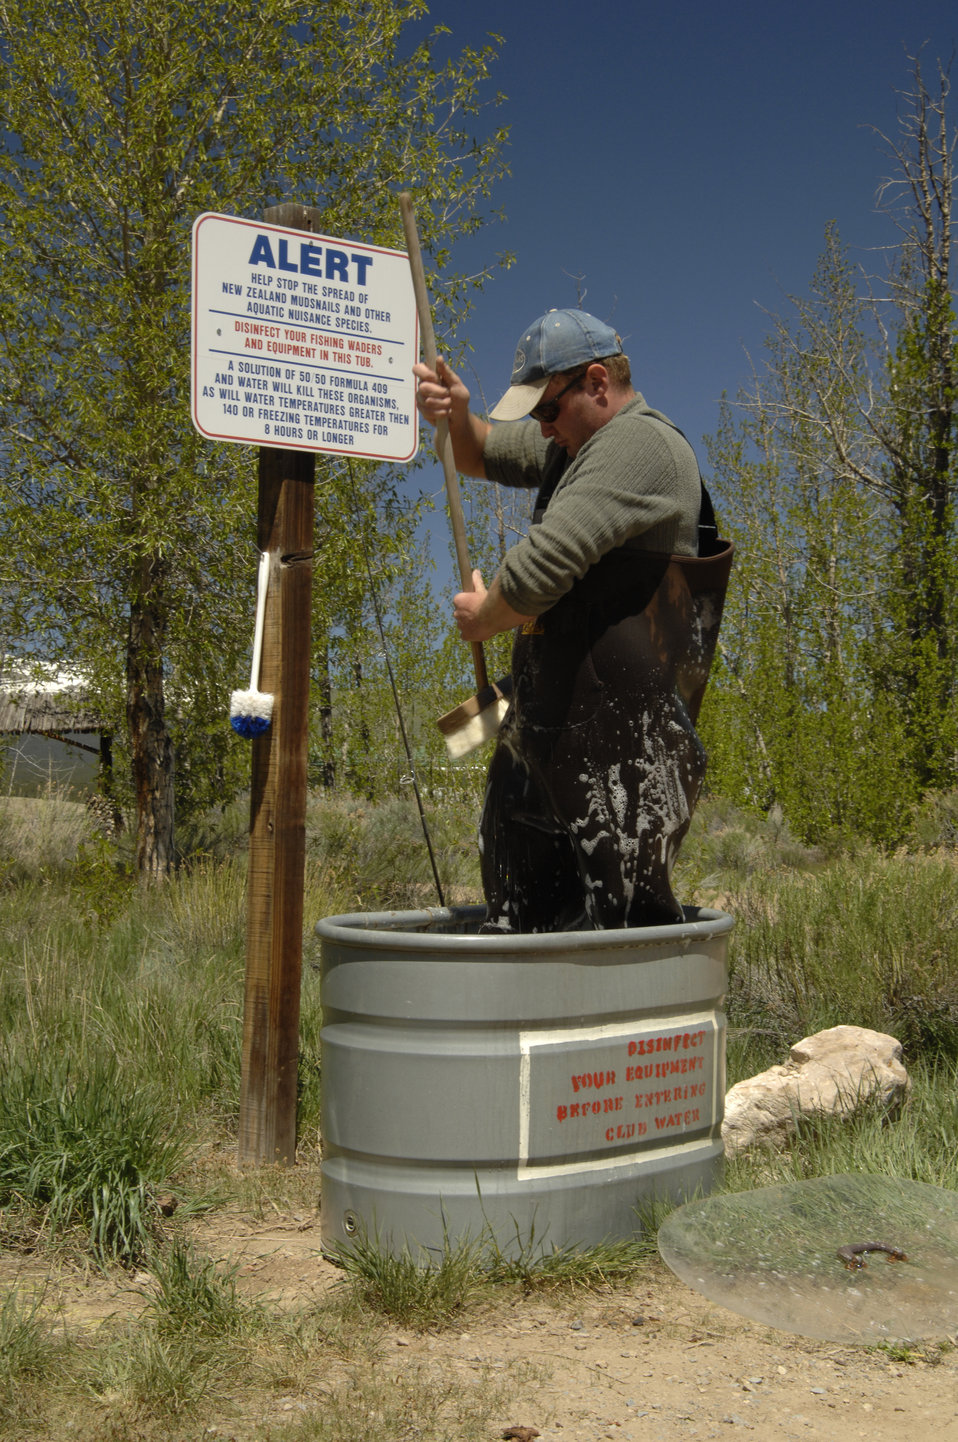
Fisherman clean off their waders and fishing gear at a wash station in the San Isabel and Gunnison National Forests, Colorado on June 12, 2012 to prevent the spread of aquatic invasive species. A species is considered invasive it is nonnative to the ecosystem and its introduction causes or is likely to cause economic or environmental harm or harm to human health. The goal of the U.S. Department of Agriculture’s (USDA) Forest Service (FS) invasive species program is to reduce, minimize, or eliminate the potential for introduction, establishment, spread, and impact of invasive species across all landscapes and ownerships.